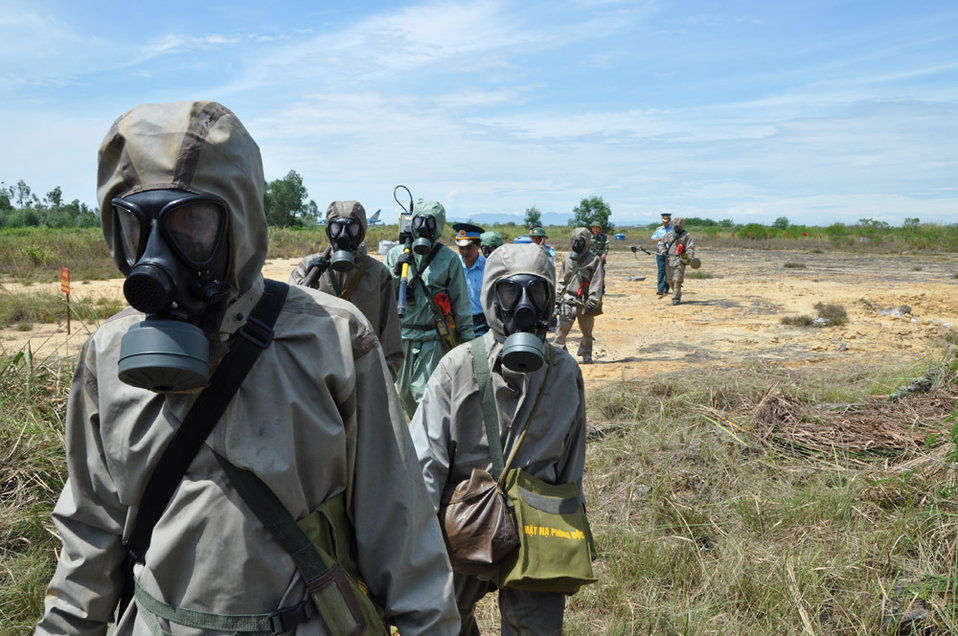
Vietnamese soldiers demonstrate UXO detection and clearance in Danang. June 17, 2011